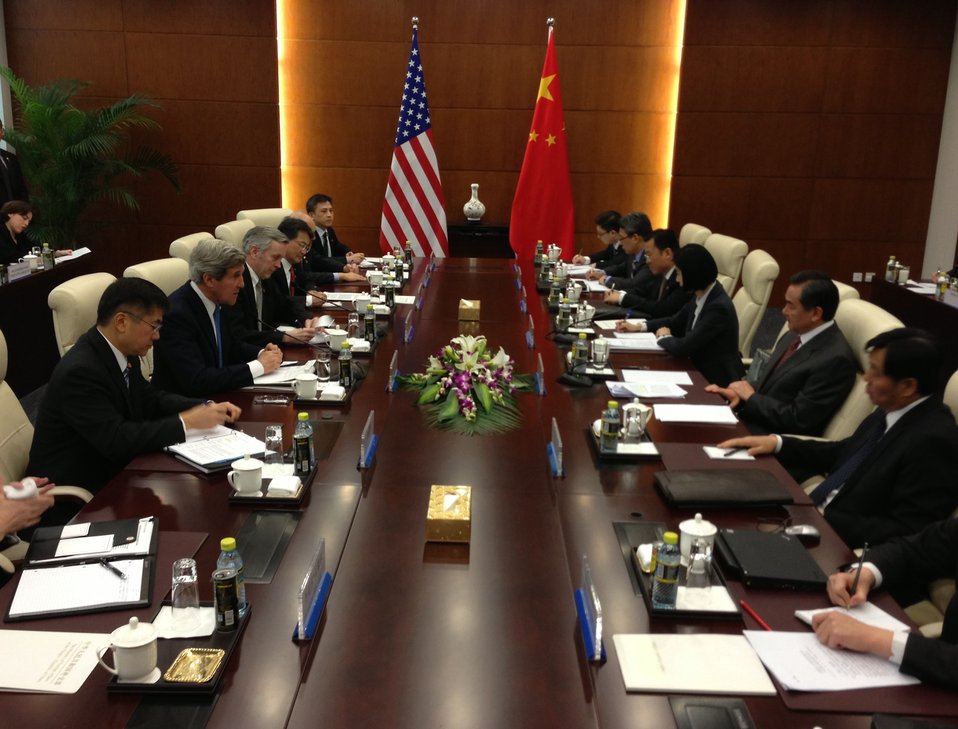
Secretary Kerry Speaks with Chinese Foreign Minister Wang Yi

U.S. Secretary of State John Kerry speaks with Chinese Foreign Minister Wang Yi at the beginning of a bilateral meeting in Beijing, China, on April 13, 2013.